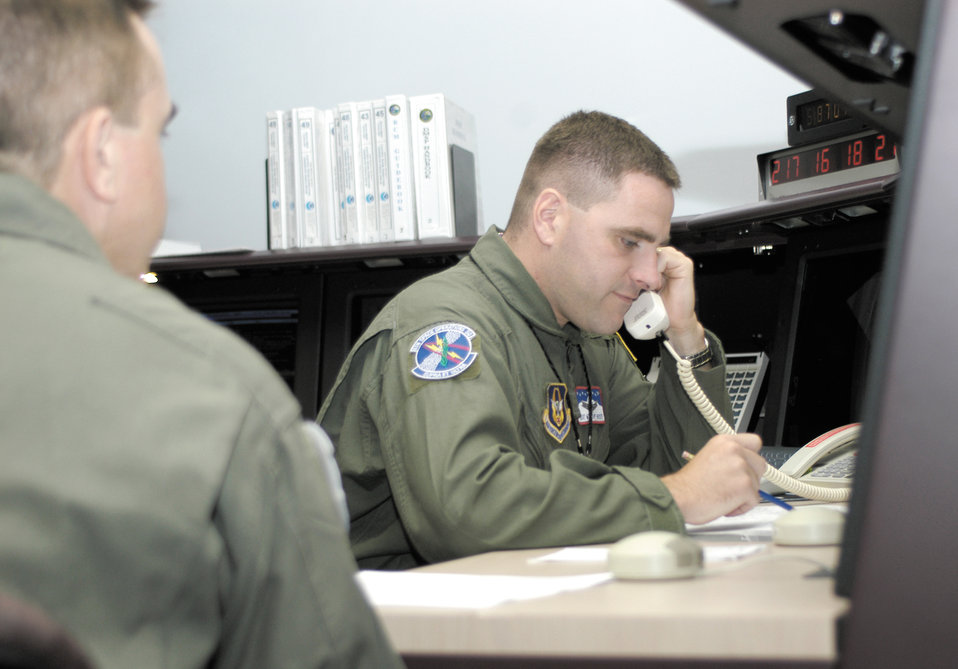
6th SOPS: Weather in 10 minutes or less, guaranteed

Tech. Sgt. Bill Hosey conducts a Defense Meteorological Satellite Program support during the 6th Space Operations Squadron's unit training activity. Contact windows are only 11 minutes due to the satellites' low-earth orbit, and the Air Force Weather Agency must receive weather data from the satellites within 10 minutes of fade.